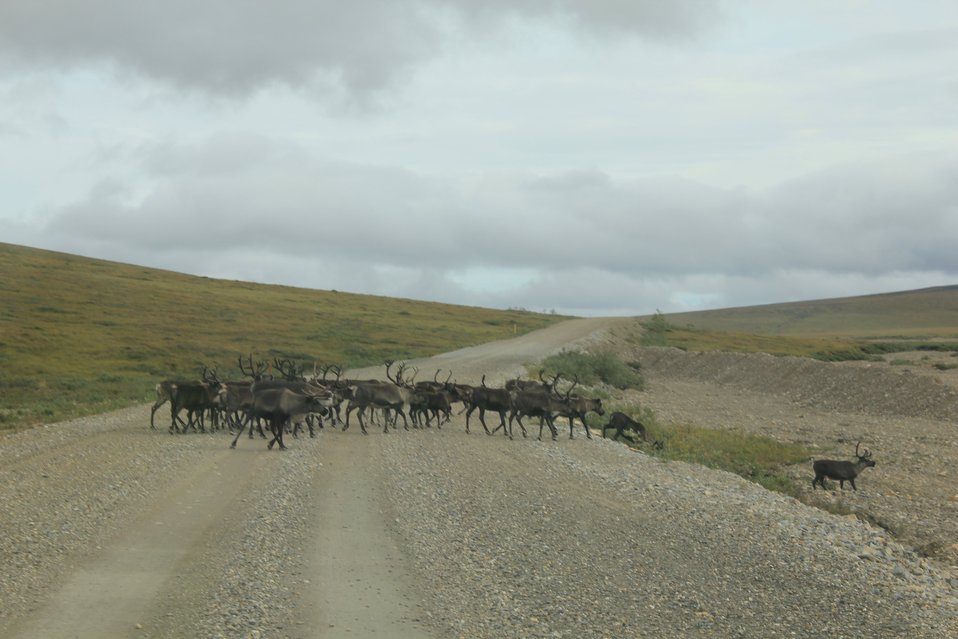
Domestic reindeer herd